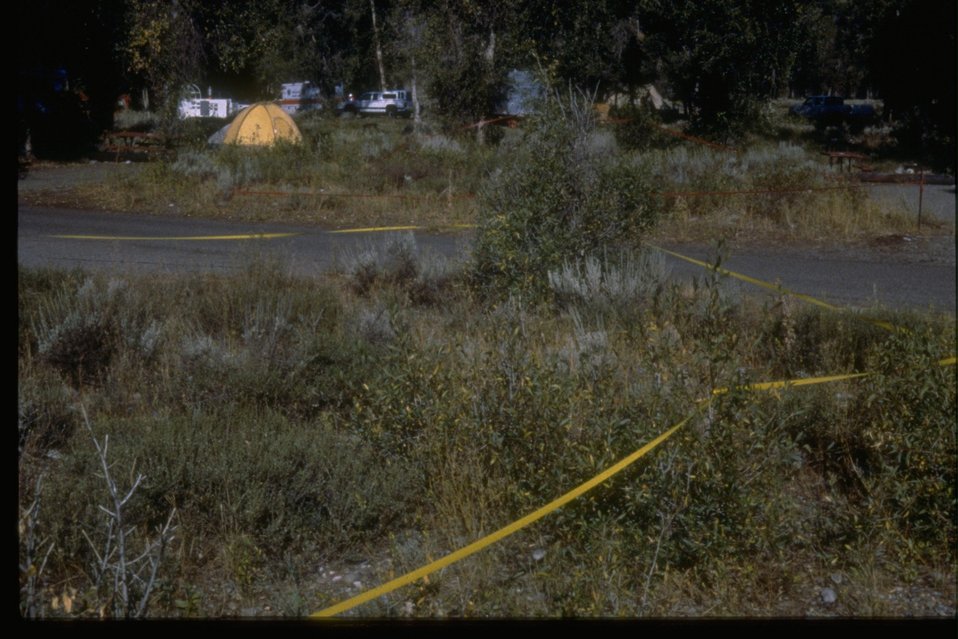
Teton National Park in Wyoming. Area cordoned off near fire camp to keep fire fighters from walking through and picking up spotted knapweed seeds.